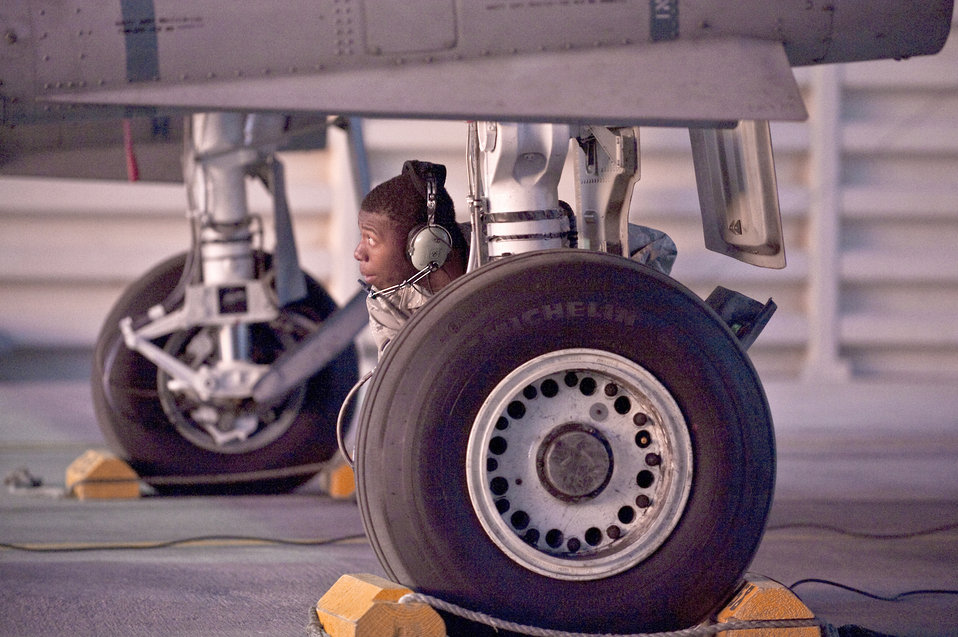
No problems here

Senior Airman Edwin Watkins looks over the landing gear of an A-10 Thunderbolt II before a training mission during the Green Flag West 11-2 exercise Dec. 10, 2010, at Nellis Air Force Base, Nev. The exercise provides a realistic air-land integration training environment for forces preparing to support worldwide combat operations. Airman Watkins is a crew chief with the 23rd Aircraft Maintenance Squadron at Moody AFB, Ga.